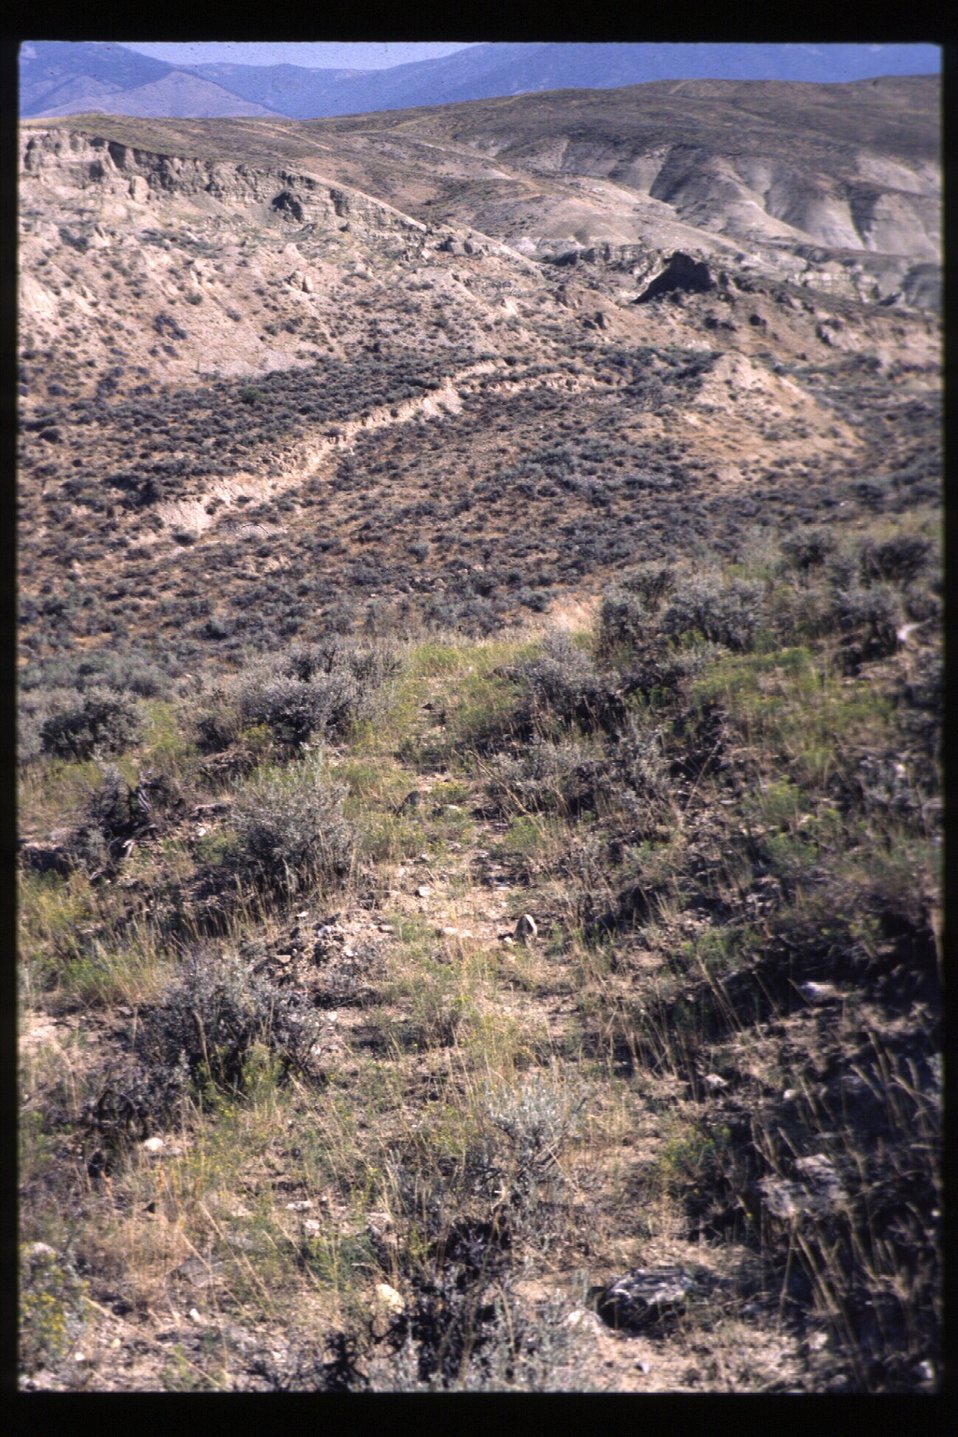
Single tread remnant of the Lewis and Clark Trail Slump Gulch Lewis and Clark Trail Salmon Field Office UCSC Upper Columbia Salmon Clearwater District